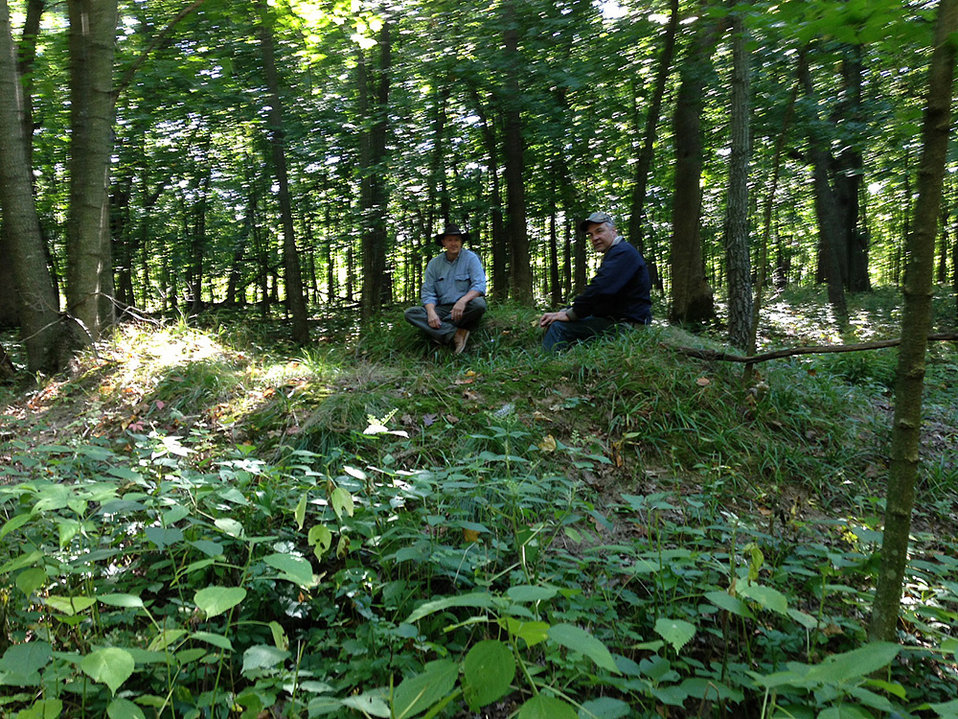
ducksmisery crater

Frank Heisner and Jim Ritterbusch sit alongside the crater of the former historical mounds.